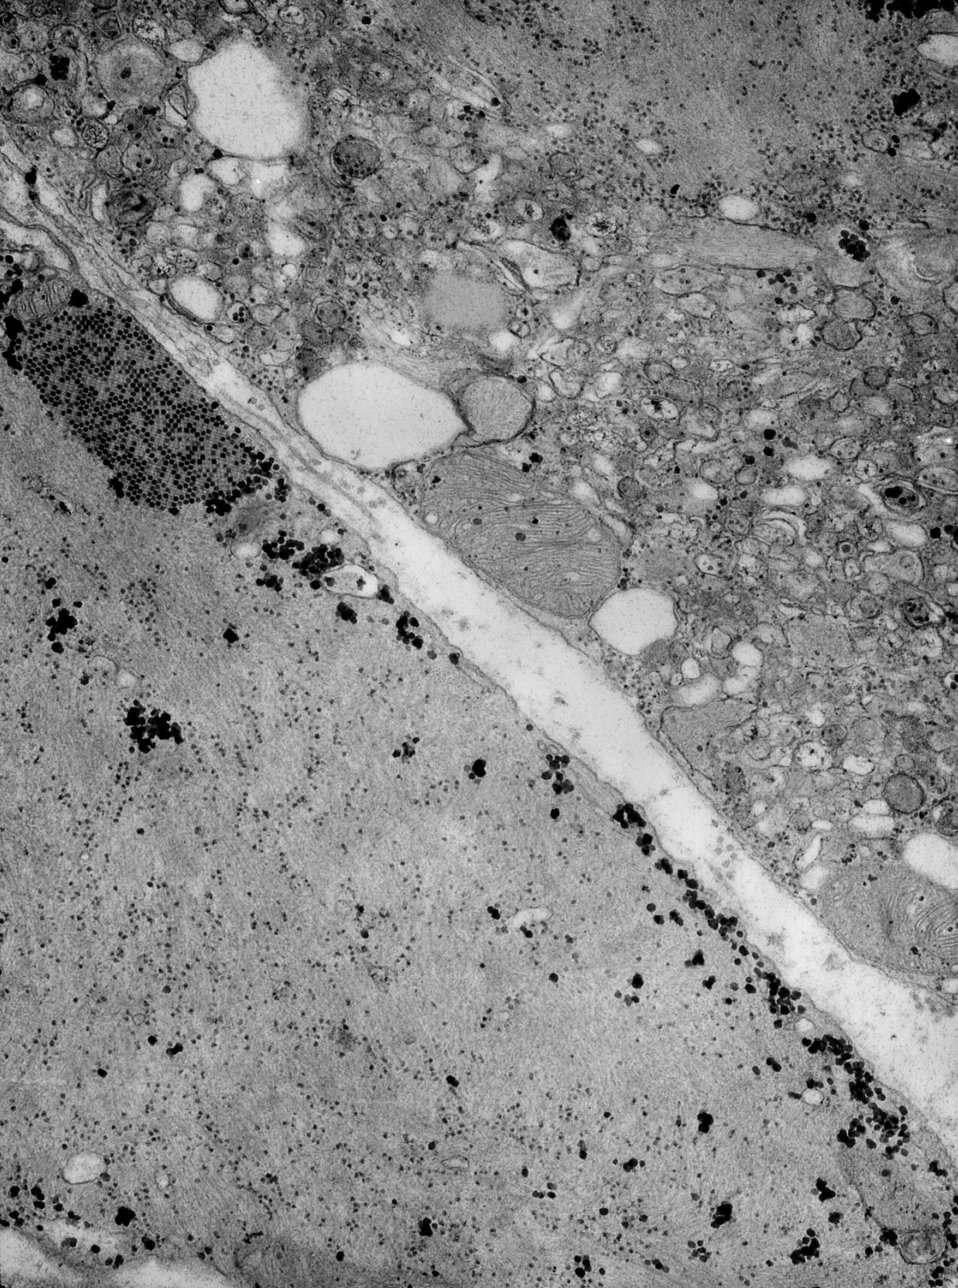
This transmission electron micrograph (TEM) revealed the presence of coxsackie B3 virus particles, which were found within a specimen of muscle tissue. coxsackie B3 virus is a member of the Picornaviridae family of viruses, and the genus, Enterovirus, as is the well-known, nearly eliminated, Poliovirus.